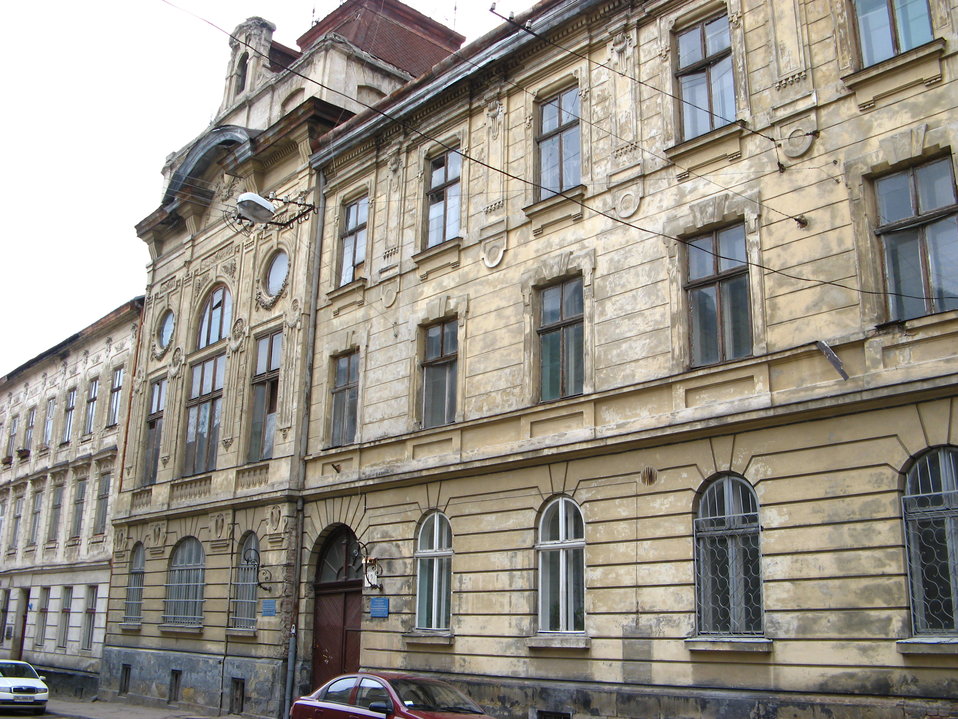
Українська: 12, Шолом-Алейхема вул. (Львів)